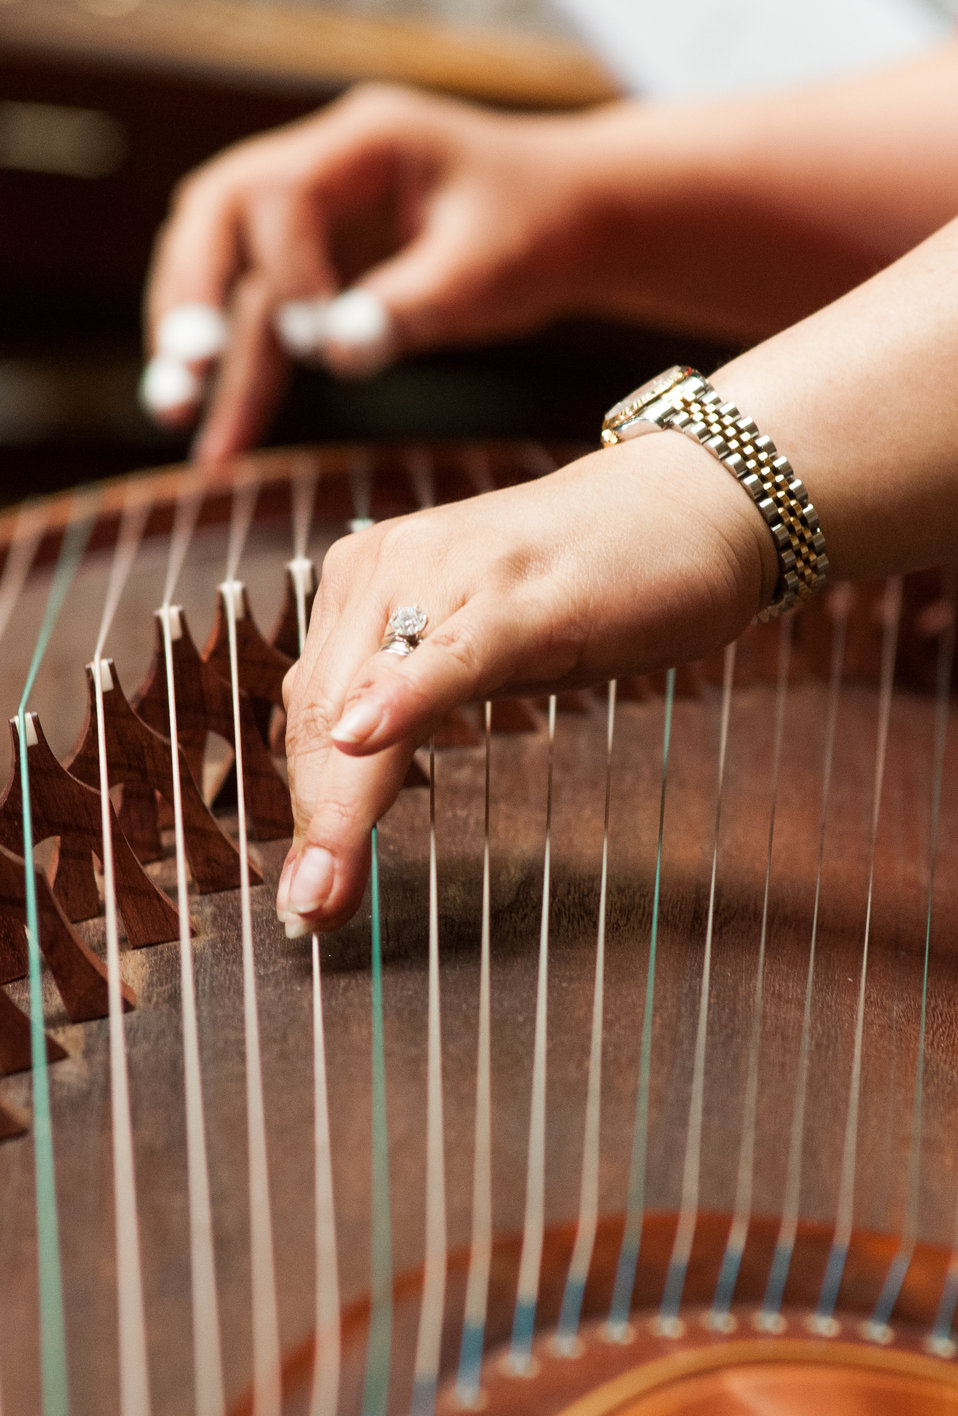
Washington Chinese Traditional Orchestra’s Huilan Chen gives a solo performance of “Gao Shan Liu shui” and “Yi zu Wu qu” on the Guzheng, an ancient type of musical instrument, during the U.S. Department of Agriculture (USDA) Asian Pacific American Heritage Month Observance, at the USDA headquarters, Whitten Building patio, in Washington, D.C., on Thursday, May 23, 2013. This year’s theme is “Building leadership; Embracing the Cultural Values and Inclusions.”